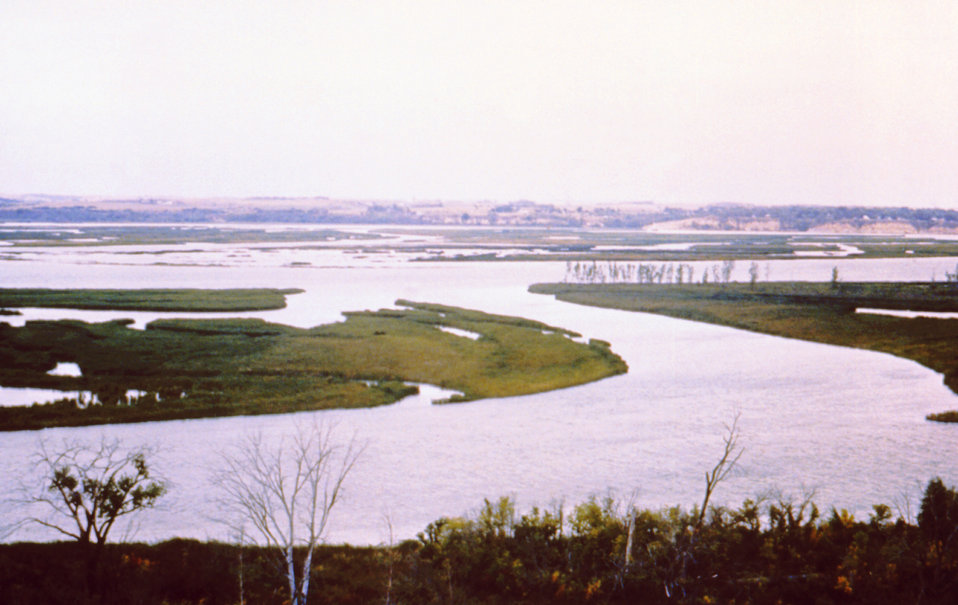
This 1976 photograph shows some of the island formations associated with Lewis and Clark Lake in Santee, Nebraska.